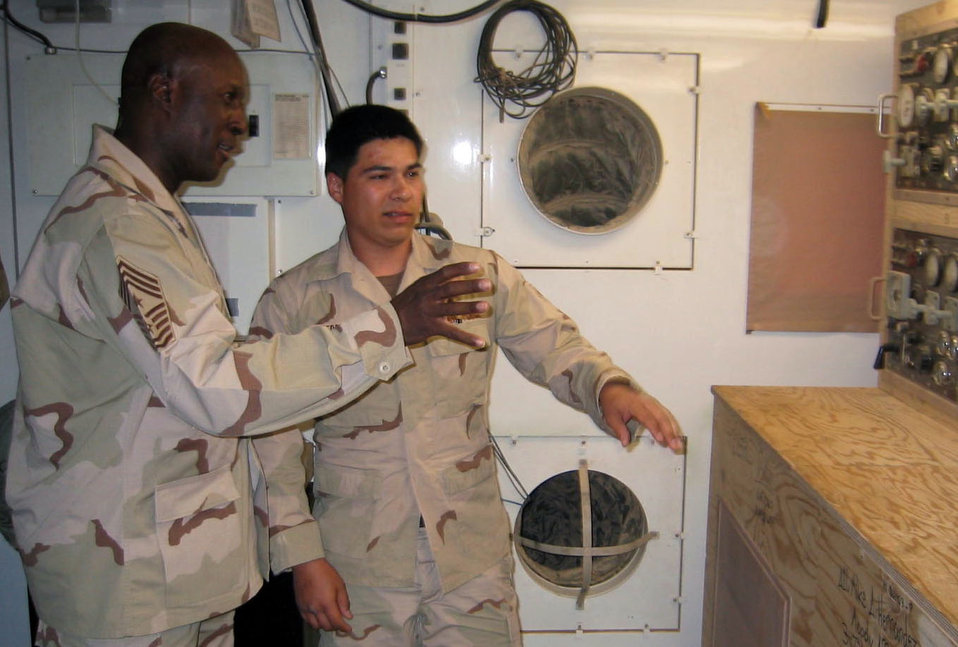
Power plant

OPERATION IRAQI FREEDOM -- Airman 1st Class Manuel Hernandez shows Chief Master Sgt. Mack Williams the inside of the 444th Air Expeditionary Group's power plant during the chief's visit to a desert air base supporting Operation Iraqi Freedom on April 6. The U.S. Central Command Air Forces command chief master sergeant travels regularly throughout the region. Hernandez is a power plant production apprentice from Moody Air Force Base, Ga.